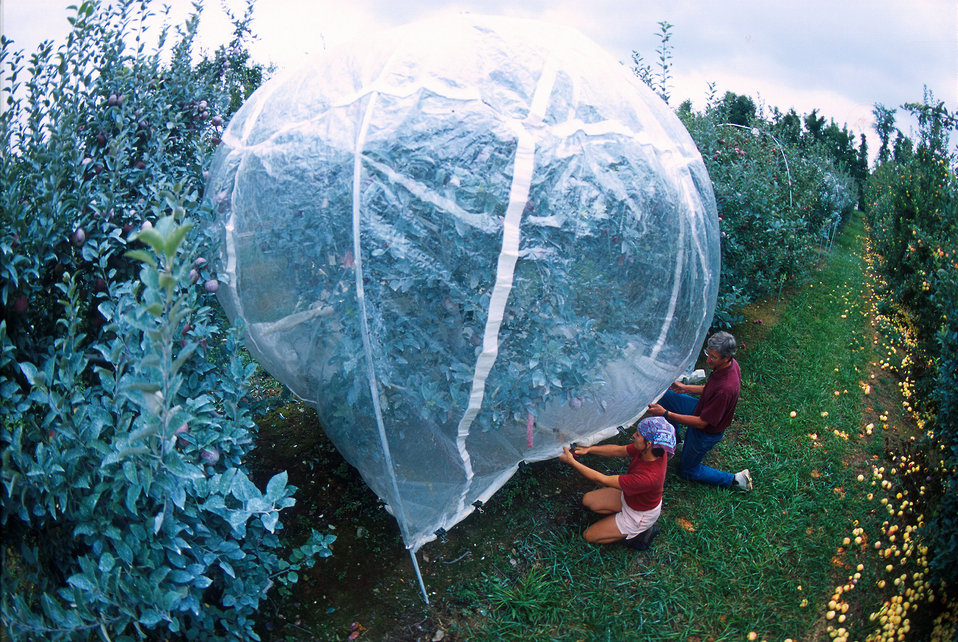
Under drought conditions, kaolin-coated trees often photosynthesize faster than uncoated trees. U.S. Department of Agriculture (USDA) Agricultural Research Service (ARS) support scientist Patty Gundrum and Glenn anchor a whole-canopy photosynthesis chamber over a kaolin tree to measure the photosynthesis rate of the whole tree.